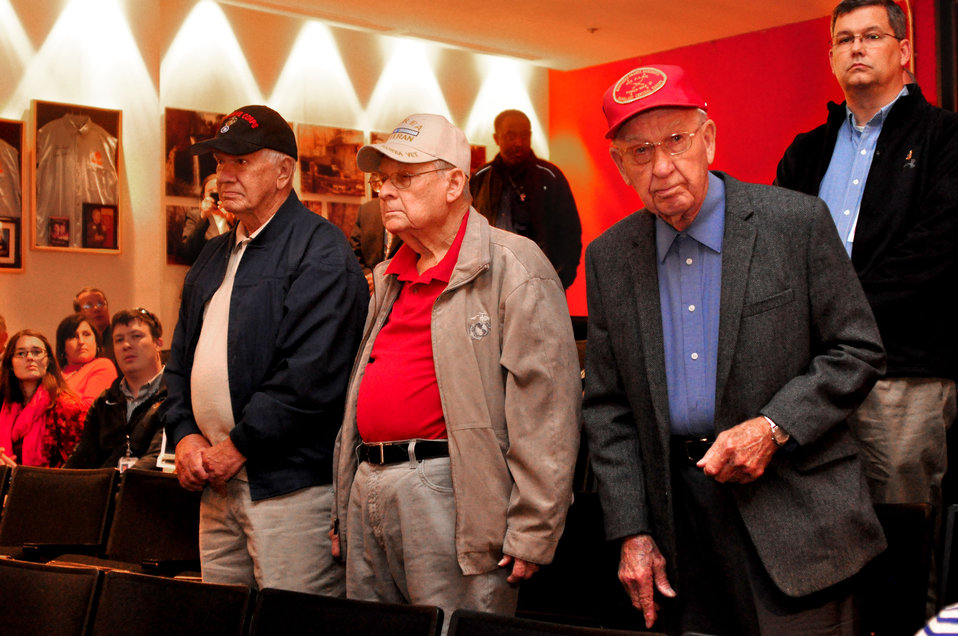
Veteran's Day Program DOE ORO Oak Ridge 2013

13-129a DOE photo Lynn Freeny 11-7-2013 Oak Ridge Tennessee